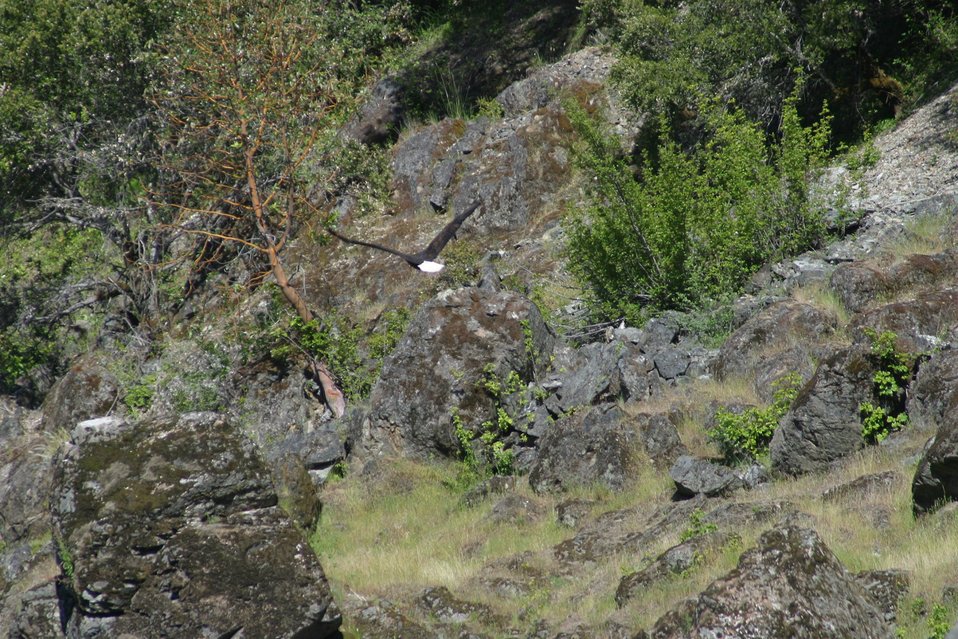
Bald eagle just below Wildcat Rapid on the Wild section of the Rogue River from Grave Creek to Foster Bar May 19 to May 22.